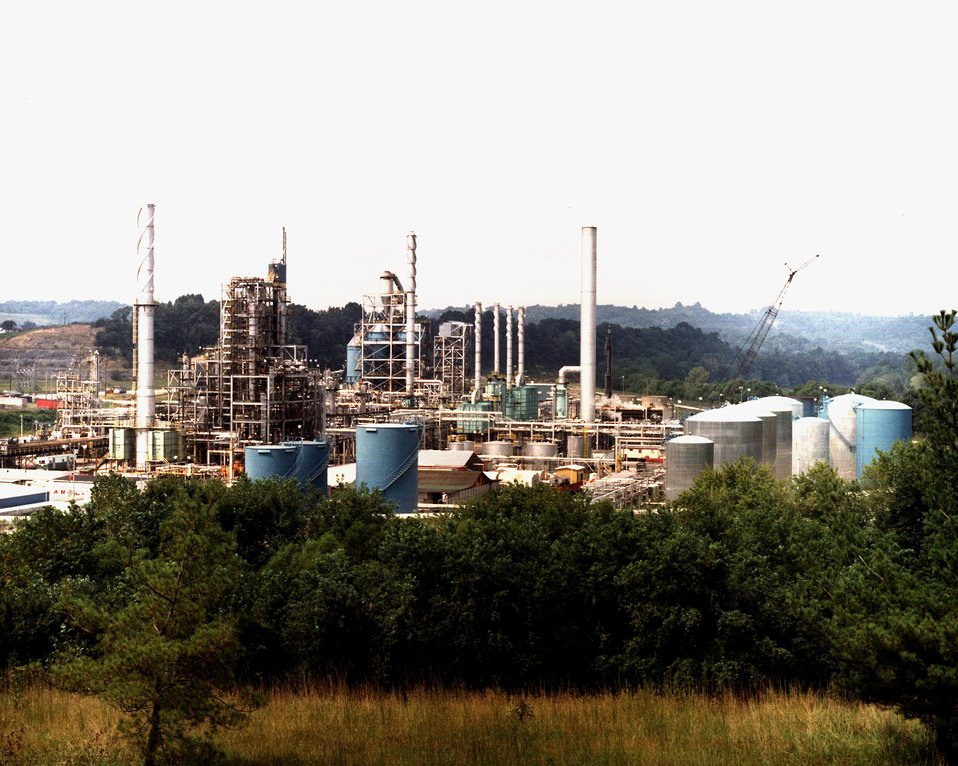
AN OVERVIEW OF THE H-COAL PILOT PLANT.